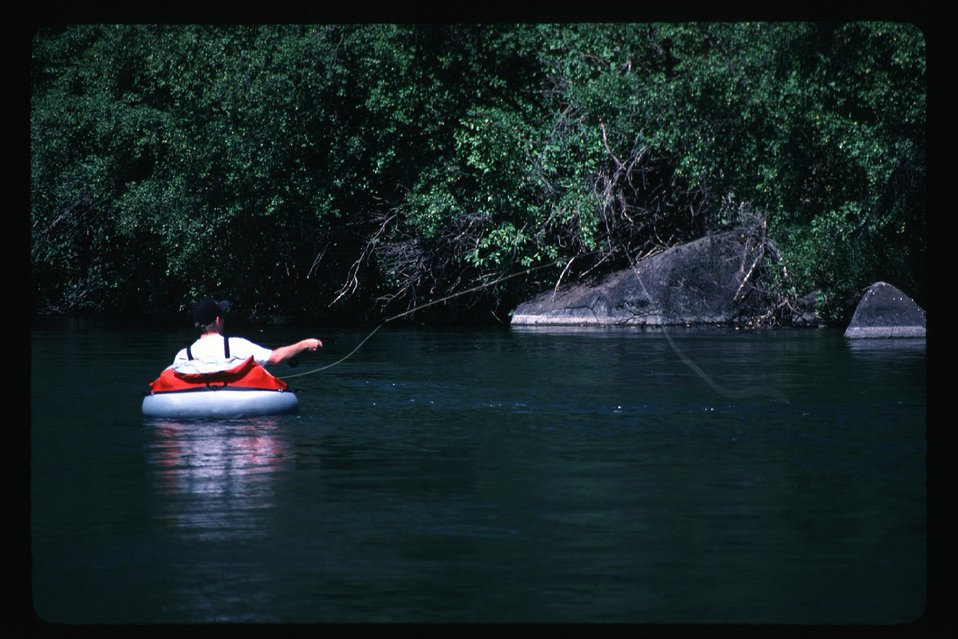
Float tube fishing South Fork of Snake River Idaho Falls Field Office USRD Upper Snake River District